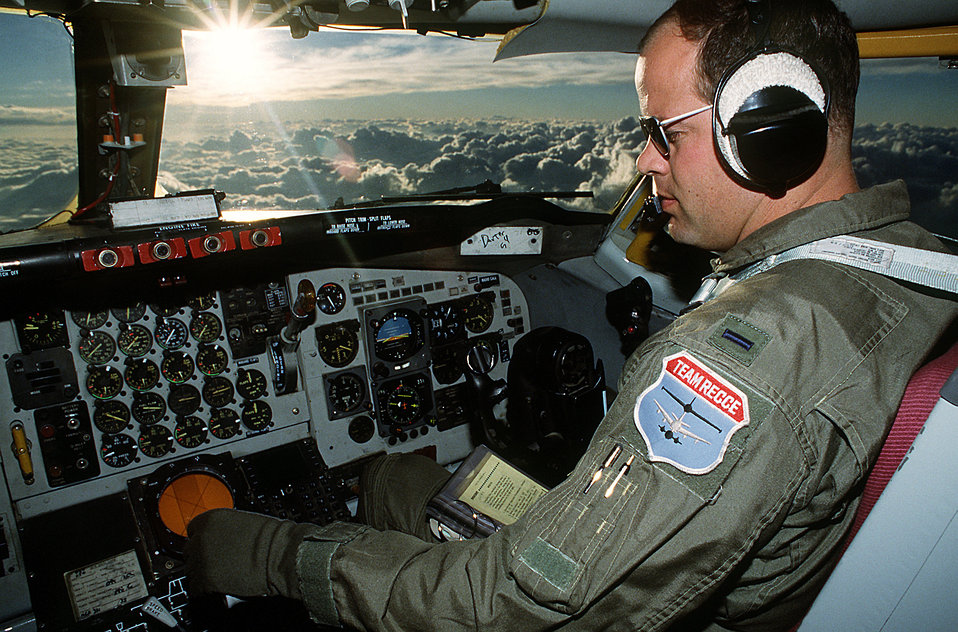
KC-135Q Stratotanker

1990's -- Lt. Johnny Summers, a KC-135Q Stratotanker aircraft co-pilot with the 1700th Air Refueling Squadron monitors controls in the cockpit of his aircraft while conducting a refueling mission over Saudi Arabia during Operation Desert Shield.